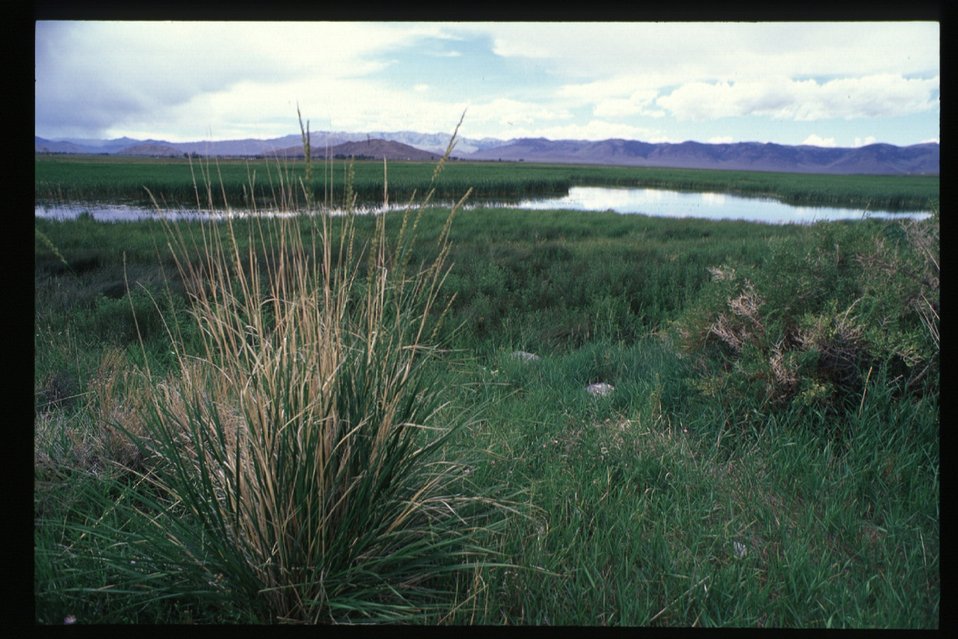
Wetlands, Chilly Slough Wildflowers and grasses Challis Field Office UCSC Upper Columbia Salmon Clearwater District